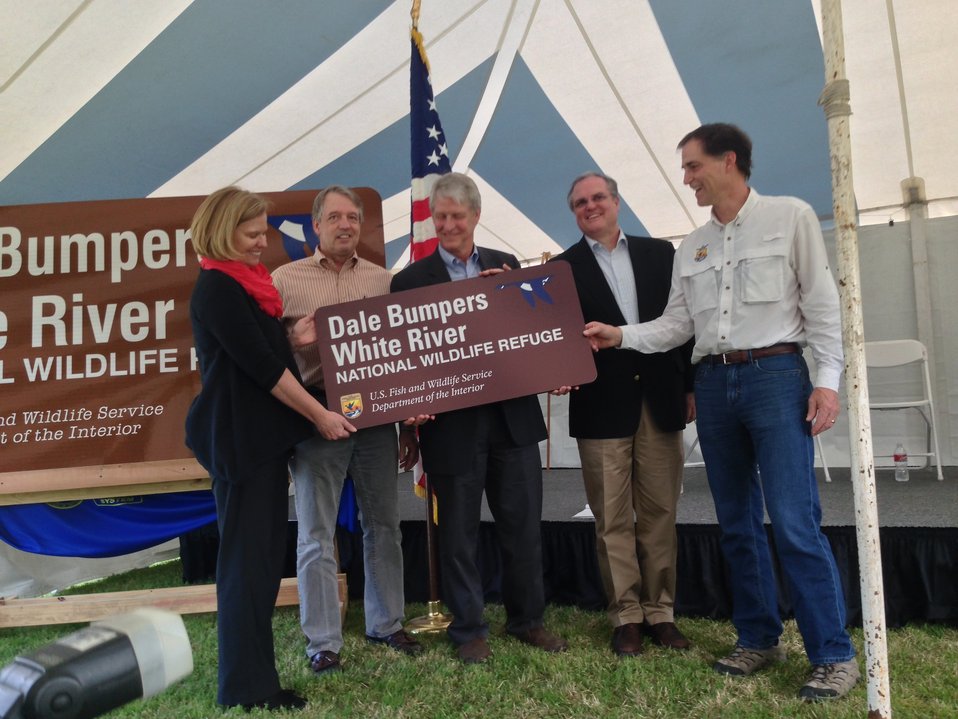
Senator Dale Bumpers renaming ceremony

At the White River National Wildlife Refuge renaming ceremony in honor of Senator Dale Bumpers.
Credit: USFWS.
www.fws.gov/refuge/white river/